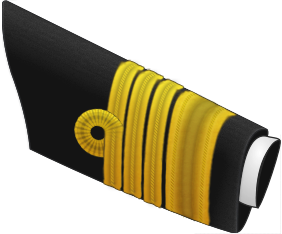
Updated Canada's Admiral